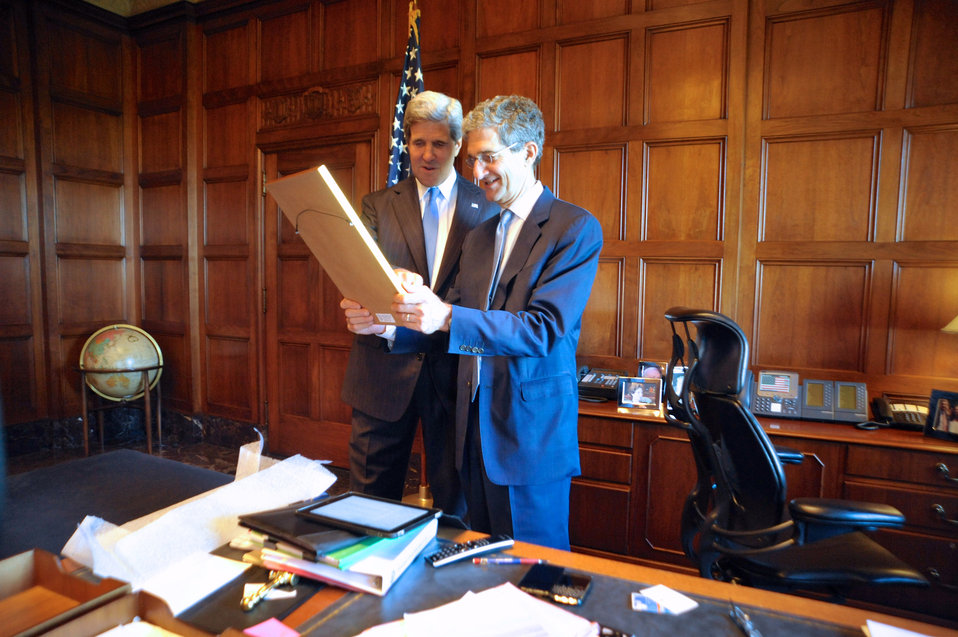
Secretary John Kerry Presents His Brother, Acting Commerce Secretary Cameron Kerry, a Framed Copy of a Joint Cable They Sent

U.S. Secretary of State John Kerry presents his brother, Acting U.S. Secretary of Commerce Cameron Kerry, with a framed copy of a joint cable they sent while serving together in the Obama Cabinet, during a visit to the Commerce Department on June 21, 2013. Cameron Kerry, the General Counsel of the Commerce Department, was holding the job until Secretary-Designate Penny Pritzker was confirmed by the U.S. Senate.